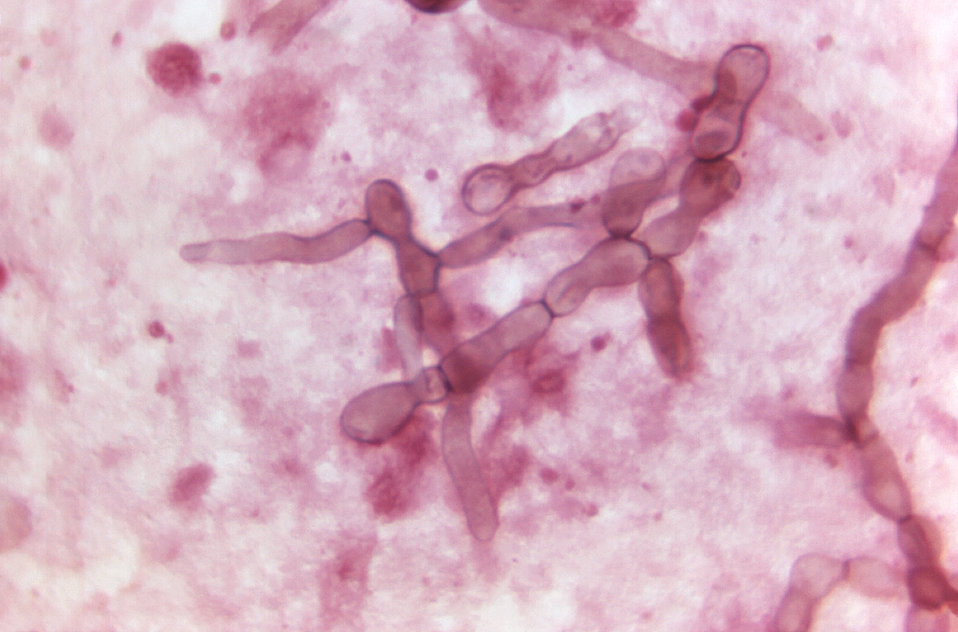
Magnified 1150X, this Gram-stained photomicrograph reveals the presence of a number of hyphae of the fungal organism, Exophiala castellanii. These fungi were harvested from a pus-laden lesion located on a patient's buttock.